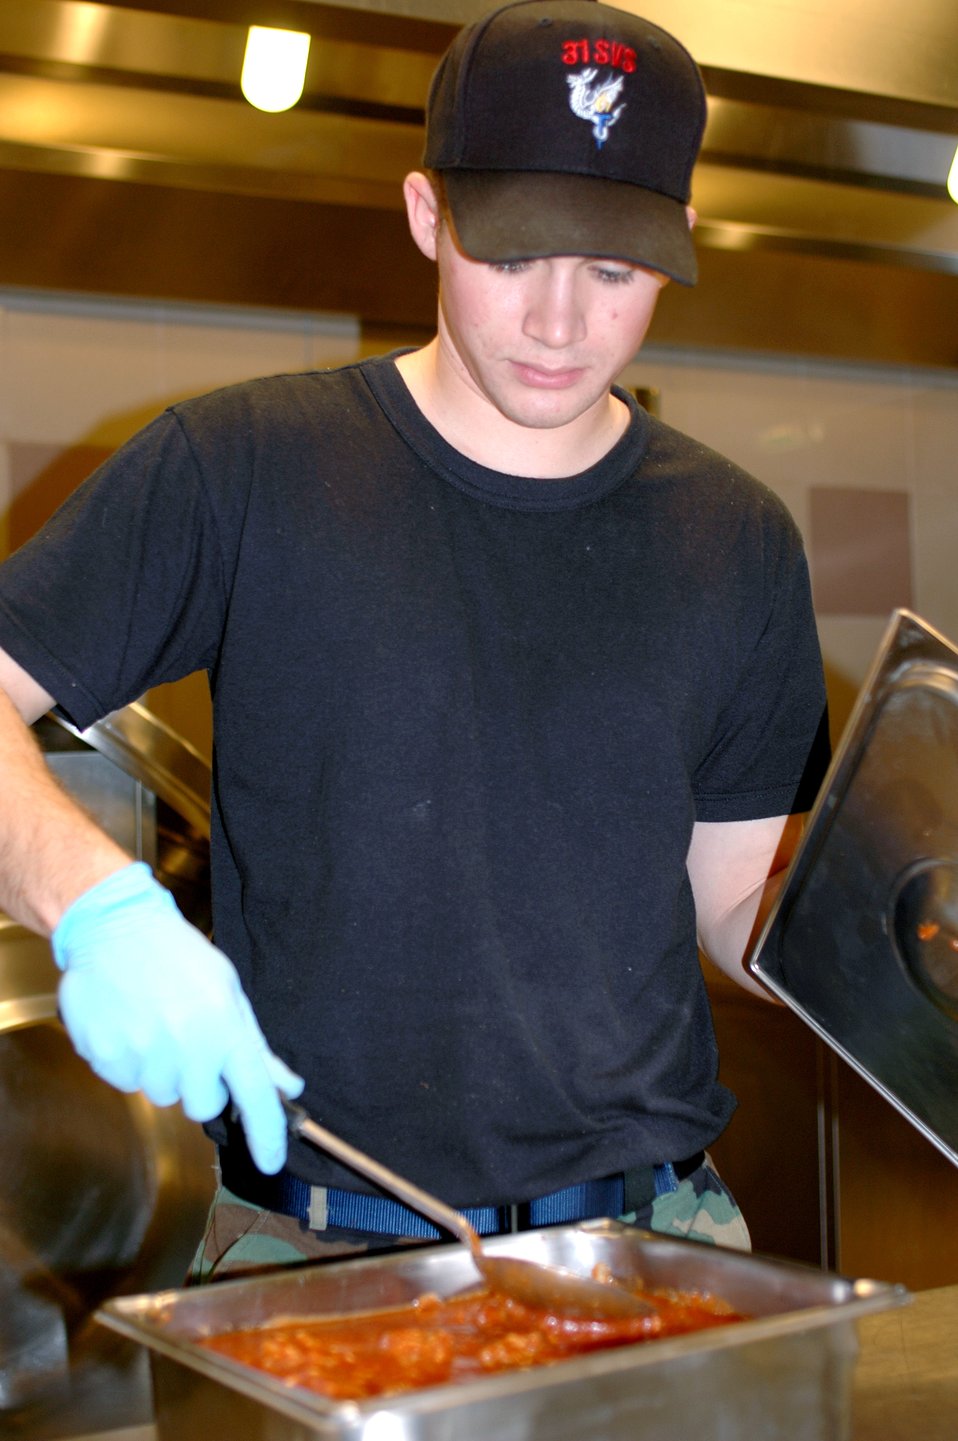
Serving Airmen

Airman Luis Lugo-Velez stirs sauce he prepared for meatball sandwiches Jan. 23 at the La Dolce Vita Dining Facility on Aviano Air Base, Italy. The La Dolce Vita Dining Facility serves 600 meals a day on average. Each shift prepares for the next shift. For example, the midnight shift prepares the morning meal, so the morning shift can come in and serve the food, clean up, and cook lunch. Airman Lugo-Velez is a 31st Services Squadron food service technician.